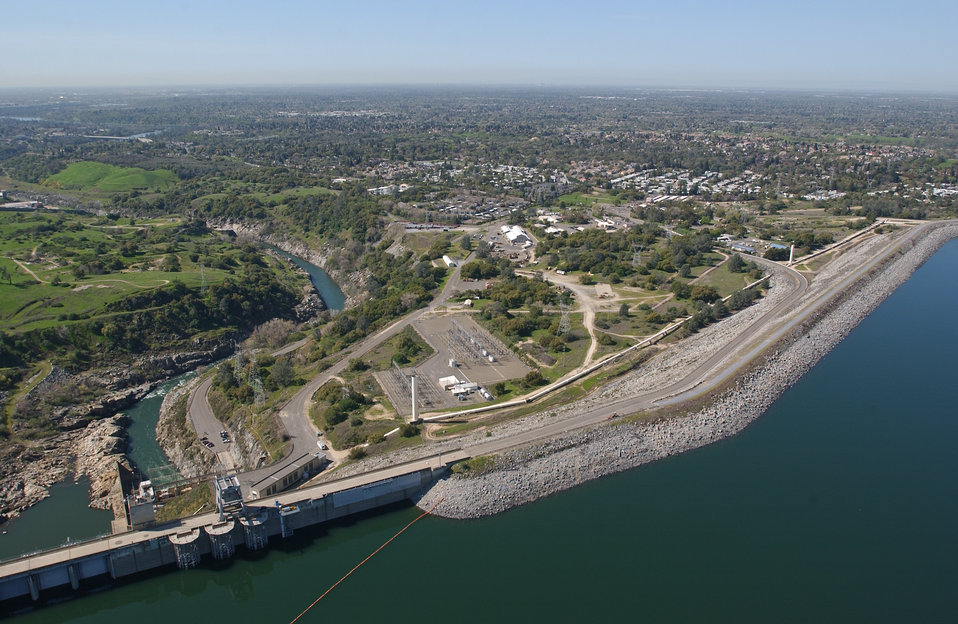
Folsom Dam on the American River

FOLSOM, Calif. (Jan. 24, 2011) - Looking west and downstream in an aerial view over Folsom Dam on the American River, prior to construction of the Folsom Lake Crossing bridge here on March 16, 2004. The U. S. Army Corps of Engineers Sacramento District was authorized to build the bridge in 2004, after security concerns closed the road atop the dam, a major commuter throughway, in 2003. The Corps completed the bridge in March 2009.